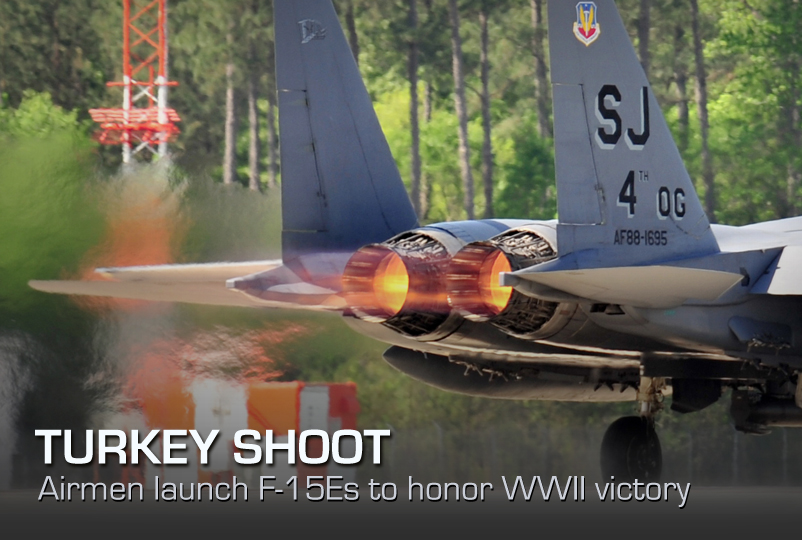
Turkey Shoot